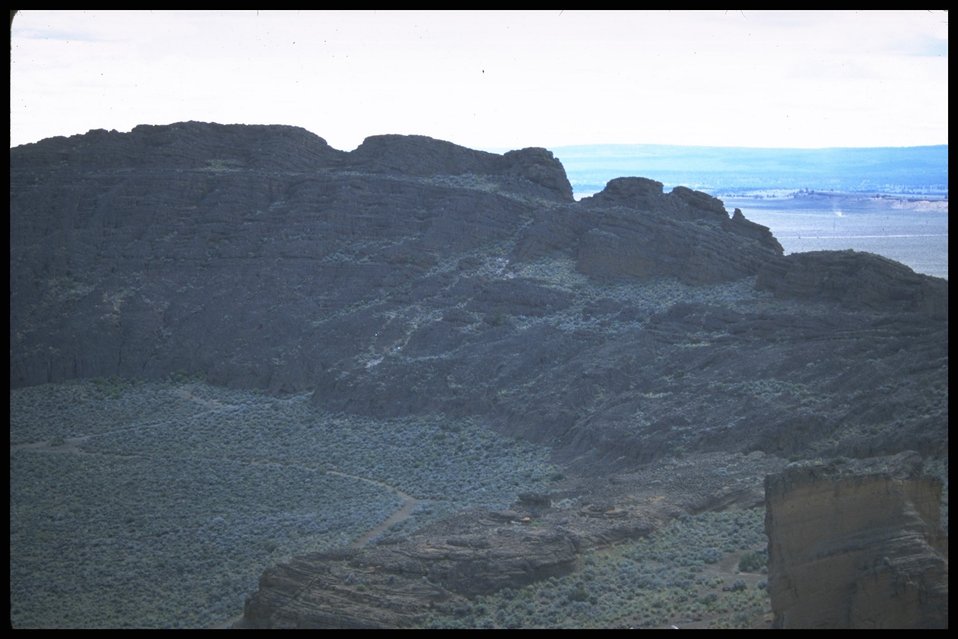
Ft. Rock, as seen from above. Lakeview District.